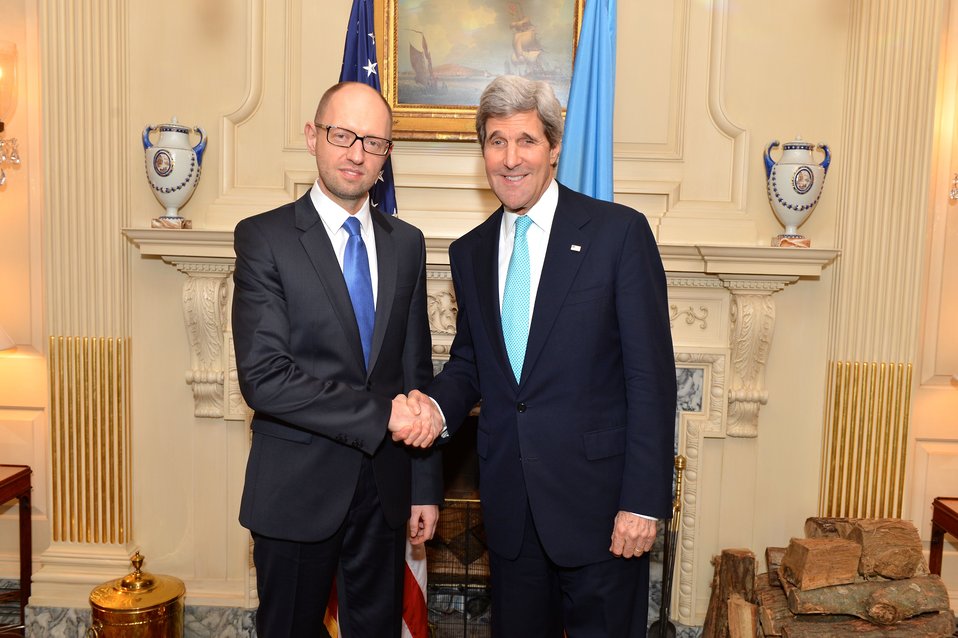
Secretary Kerry Meets With Ukrainian Prime Minister Yatsenyuk

U.S. Secretary of State John Kerry meets with Ukrainian Prime Minister Arseniy Yatsenyuk at the U.S. Department of State in Washington, D.C., on March 12, 2014.